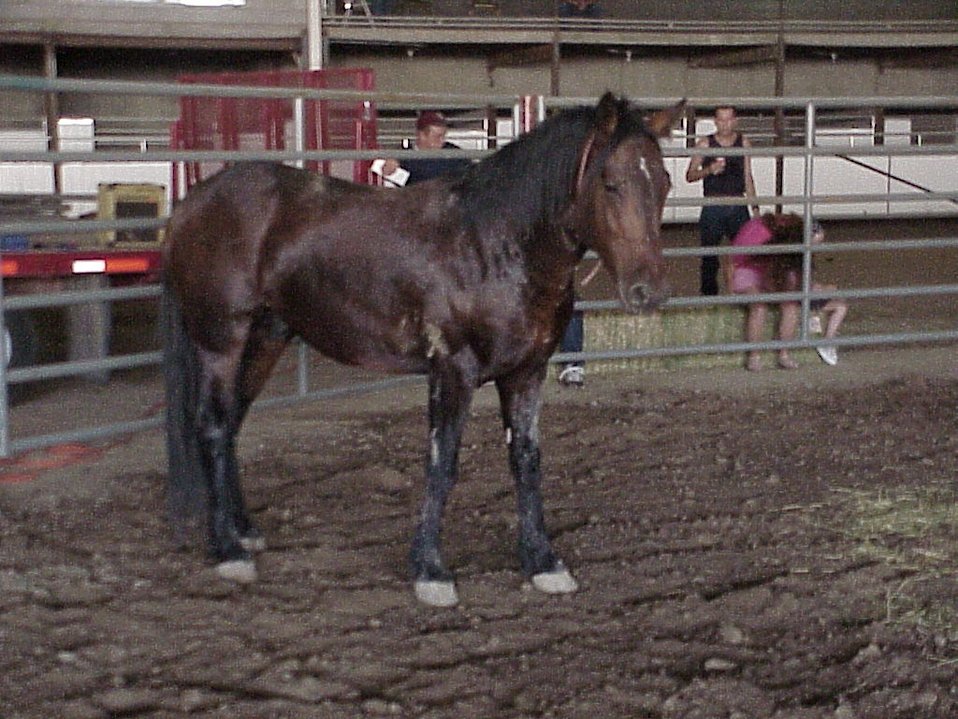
Lewiston Wild Horse and Burro Adoption Program Auction WHB indoor auction Cottonwood Field Office UCSC Upper Columbia Salmon Clearwater District